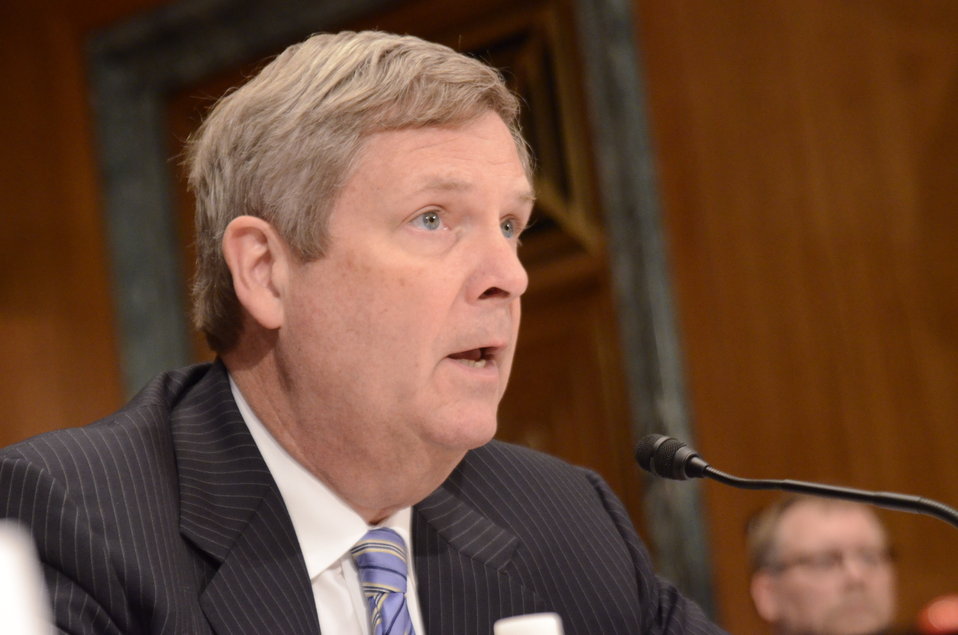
Agriculture Secretary Tom Vilsack testifies before the Senate Agriculture Appropriations Committee on the fiscal year 2013 budget at the Dirksen Senate Office Building in Washington, D.C., on Thursday, March 29, 2012.